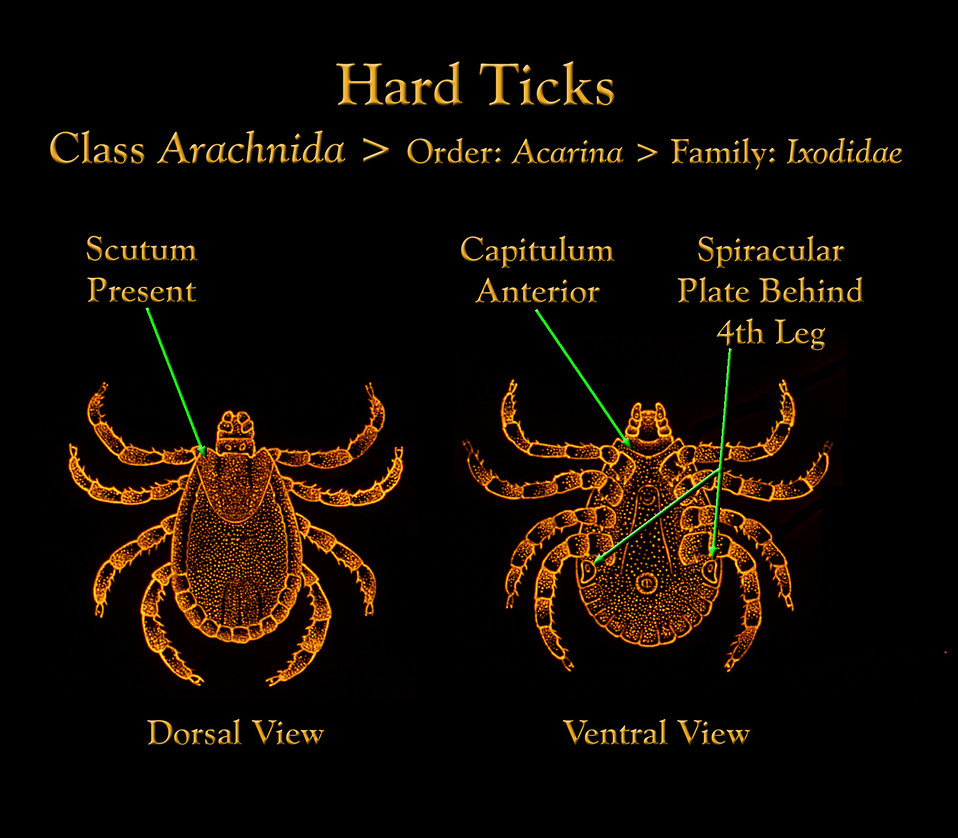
This drawing depicts an Ixodidae hard tick from the dorsal and ventral perspectives revealing its morphologic features.